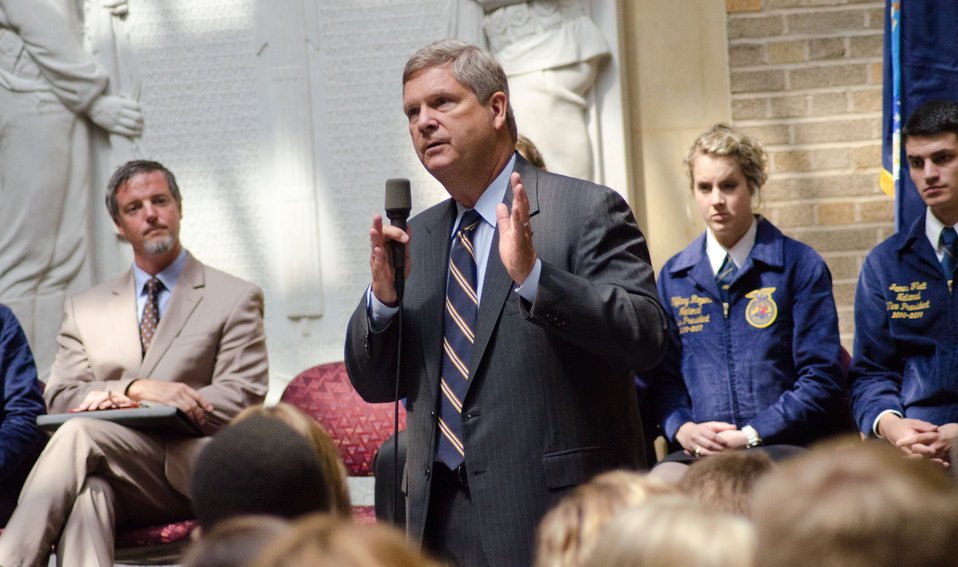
Agriculture Secretary Tom Vilsack answers questions from the National Future Farmers of America (FFA) leadership about debt limits, farm loans, importance of the Farm Bill and other questions while at the U.S. Department of Agriculture in Washington, DC, on Thursday, July 28, 2011.